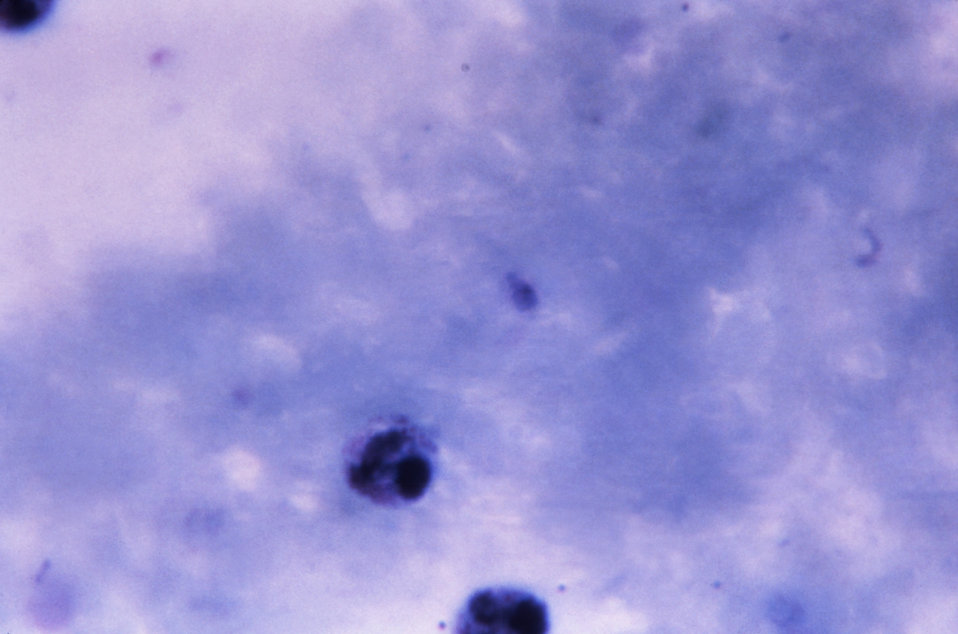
This thick film Giemsa stained micrograph reveals the presence of mold contaminants producing an artifactual finding.